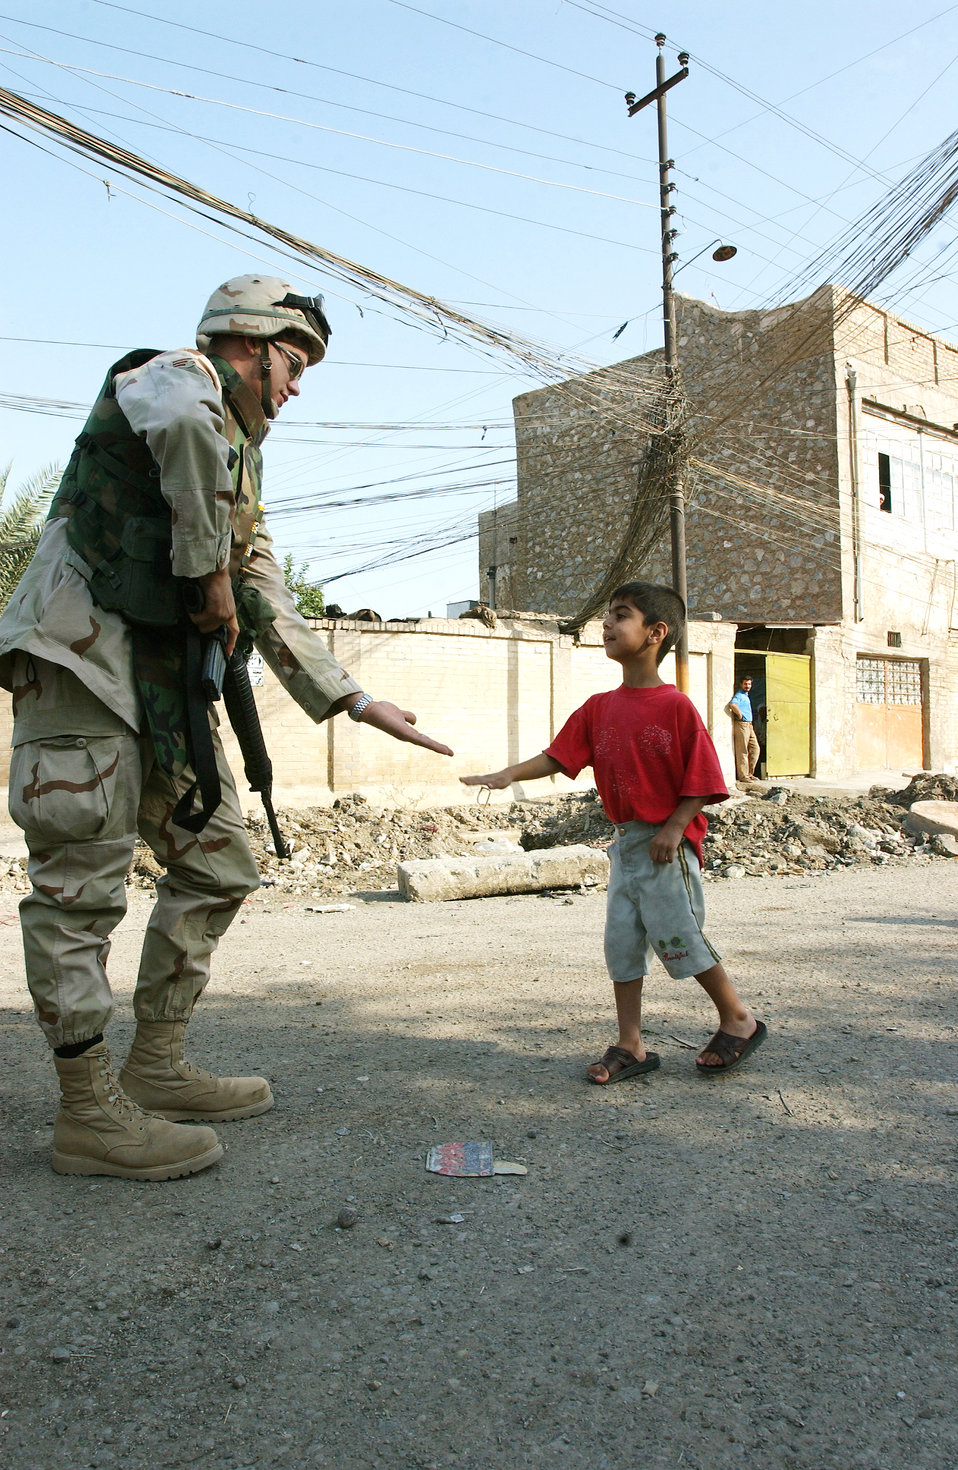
What's Happening Buddy

KIRKUK AIR BASE, Iraq -- Staff Sgt. Jeffery Foster, a fire fghter deployed to the 506th Expeditionary Civil Engineering Squadron here, says